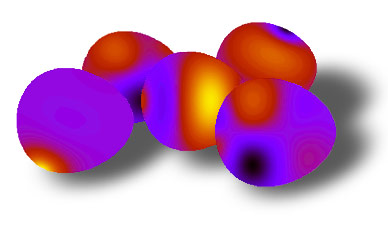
Nano-Eggs

Collage of NIST 'nano-eggs' — simulated magnetic patterns in NIST’s egg-shaped nanoscale magnets.